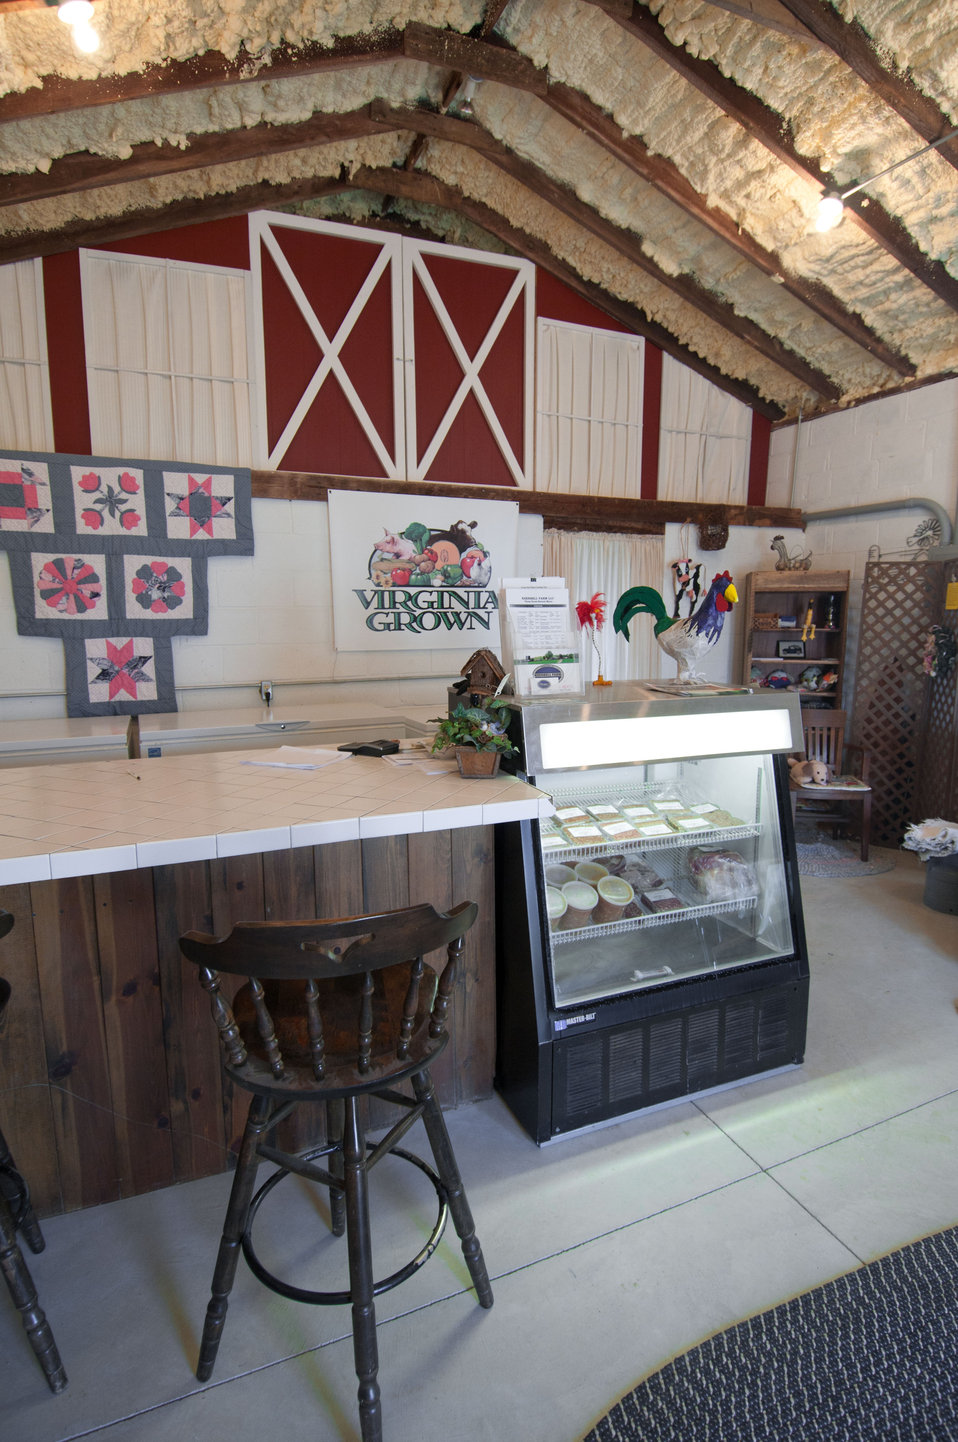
3rd generation farmer CJ Isbell takes pride in in the pork products he produces at Keenbell Farm, Rockville, VA, on Friday, May 6, 2011. The farm was established in 1951. Business has been very good for farmers with pasture raised pigs. Isbell finds it a challenge to expand fast enough to meet demands. Keenbell Farms pork products range from sausage, to bacon, pork chops, roasts, bratwurst, and many more in his onsite sales room and the Fall Line Farms food hub that offer a wide variety of household food staples and specialty items. Members can pick their customized orders from an ever changing inventory of fruits, vegetables, meats, soaps, eggs, cheeses, flowers, honey, pastas, sauces, syrups, baked goods, mushrooms, flour and grains. Suppliers post what they have to sell on Lulus Local Food online listing where customers can make their selection. Every Thursday, suppliers team up to deliver customized orders to, one of several pick-up points, designated by the customer in or around the Richmond, VA area.